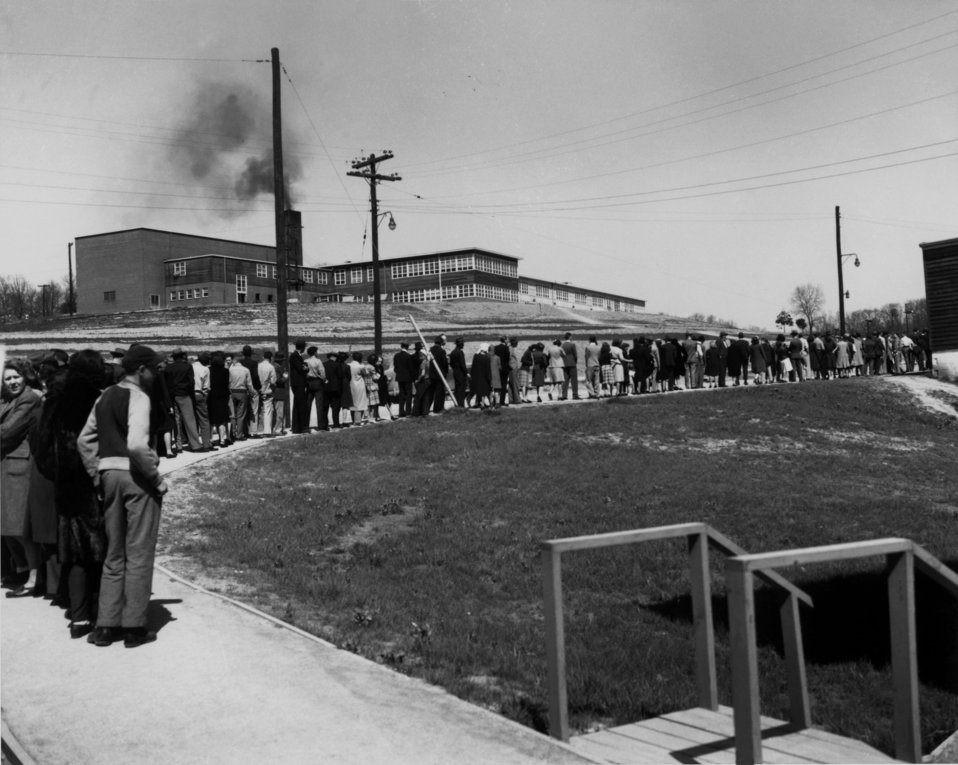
Line For Cigarettes at Williams Drug Store-Jackson Sq. Oak Ridge

pro 362-7 DOE photo by Ed Westcott 3/11/1945 Oak Ridge Tennessee
Line For Cigarettes at Williams Drug Store-Jackson Sq.